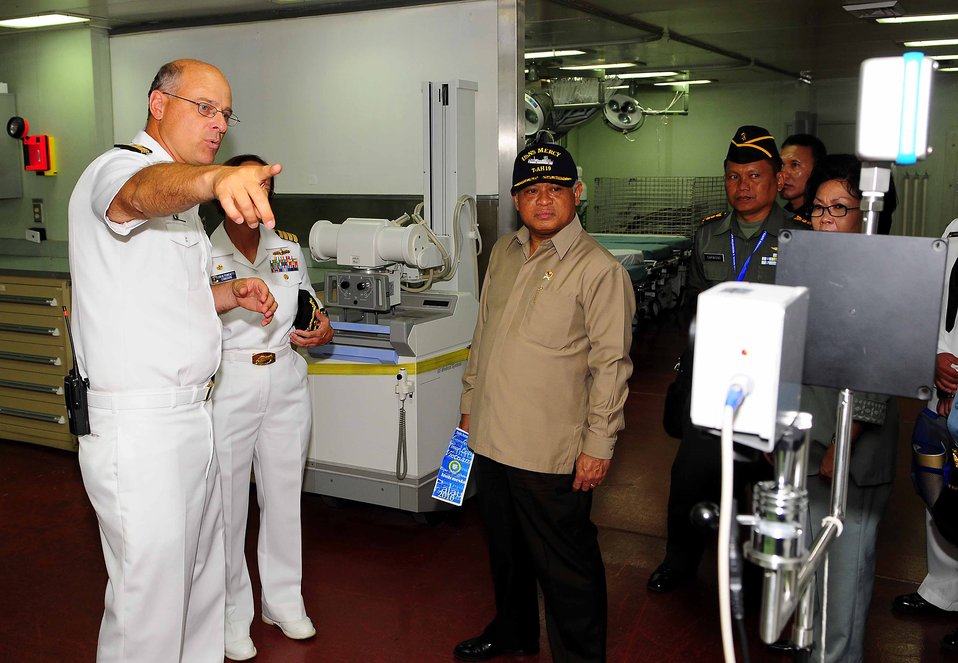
Capt. (Dr.) Parrish Explains a Thermal Image Scanner to Indonesian Defense Minister Dr. Purnomo Yusgiantoro

Capt. (Dr.) John Parrish explains a thermal image scanner to Indonesian Defense Minister Dr. Purnomo Yusgiantoro during his visit aboard the Military Sealift Command hospital ship USNS Mercy (T-AH 19) on August 2, 2010. Mercy is in Ambon, Indonesia, participating in Sail Banda 2010, a series of events hosted by the Government of Indonesia to promote the future of small islands.